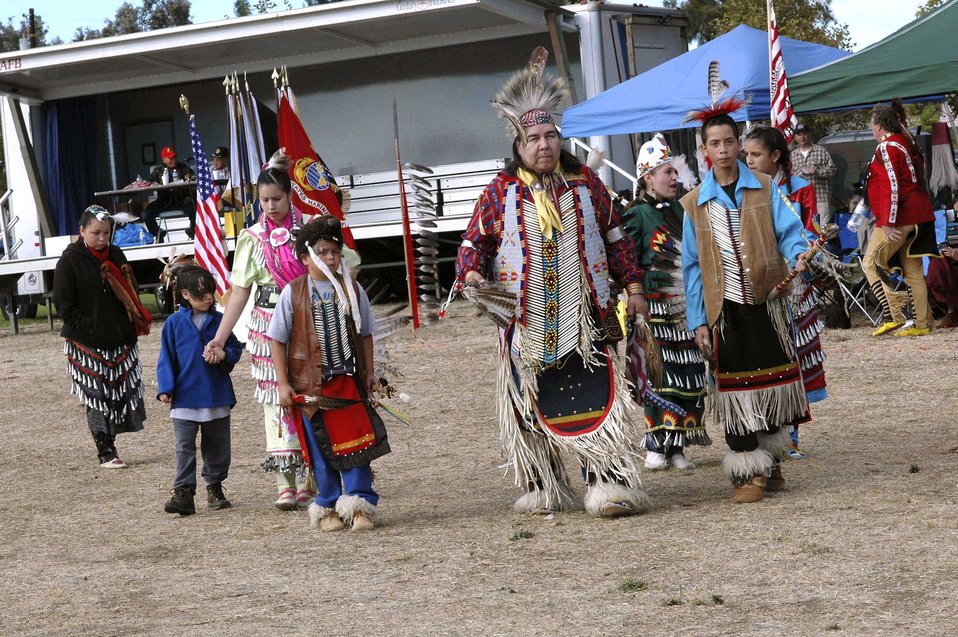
Powwow

TRAVIS AIR FORCE BASE, Calif. (AFPN) -- Native Americans participate in a traditional dance during the fourth annual Veterans Pow Wow here. About 20 separate Native American nations were represented in the two-day event Nov. 5 and 6.